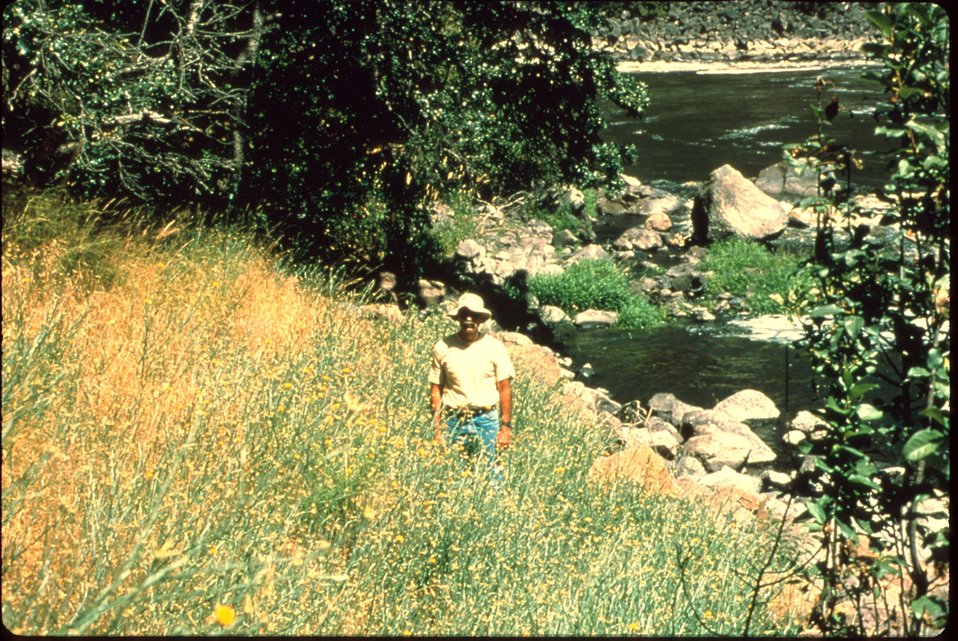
Yellow Starthistle taking over a camping site Idaho vegetation Plants in BLM